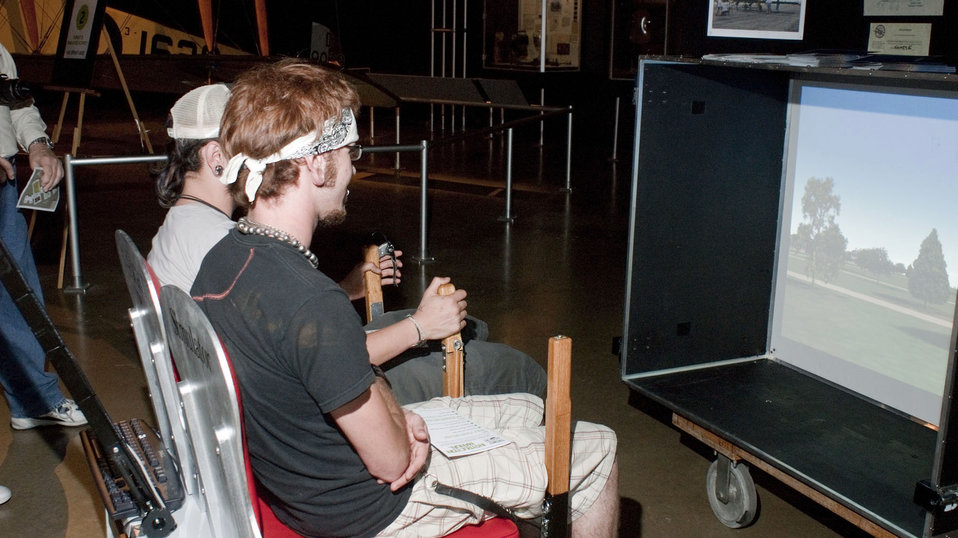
Huge crowd turns out for Night at the Air Force Museum

Visitors tried their hand at flying a Wright B Flyer during Night at the Air Force Museum May 15 at the National Museum of the U.S. Air Force in Dayton, Ohio.